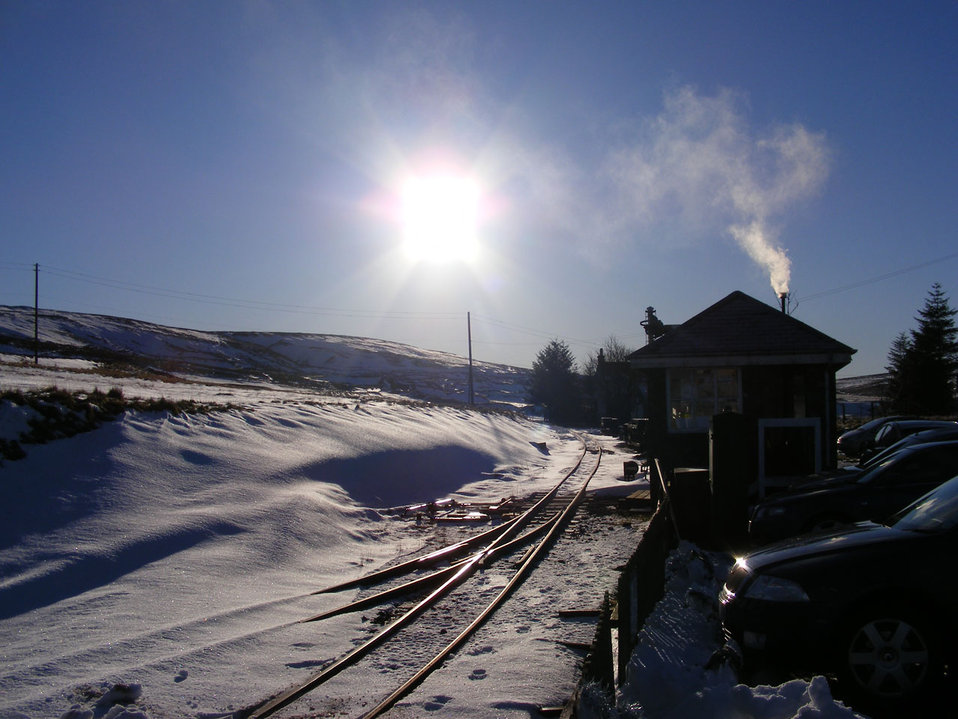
Winter on the railway

Setting sun at leadhills & wanlockhead railway, december 2008.